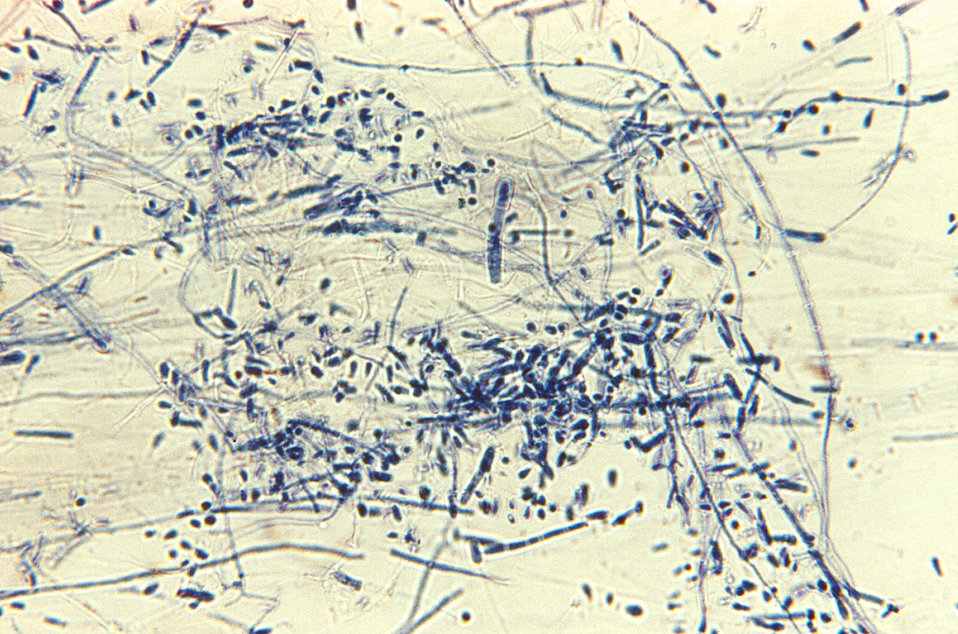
Magnified 475X, this photomicrograph depicts some of the structural morphology of numerous Trichophyton violaceum fungal organisms. This dermatophyte had been grown in a thiamine-enriched medium, and of note, are the macroconidia, and microconidia, which are the organism's reproductive cells, otherwise known as spores.